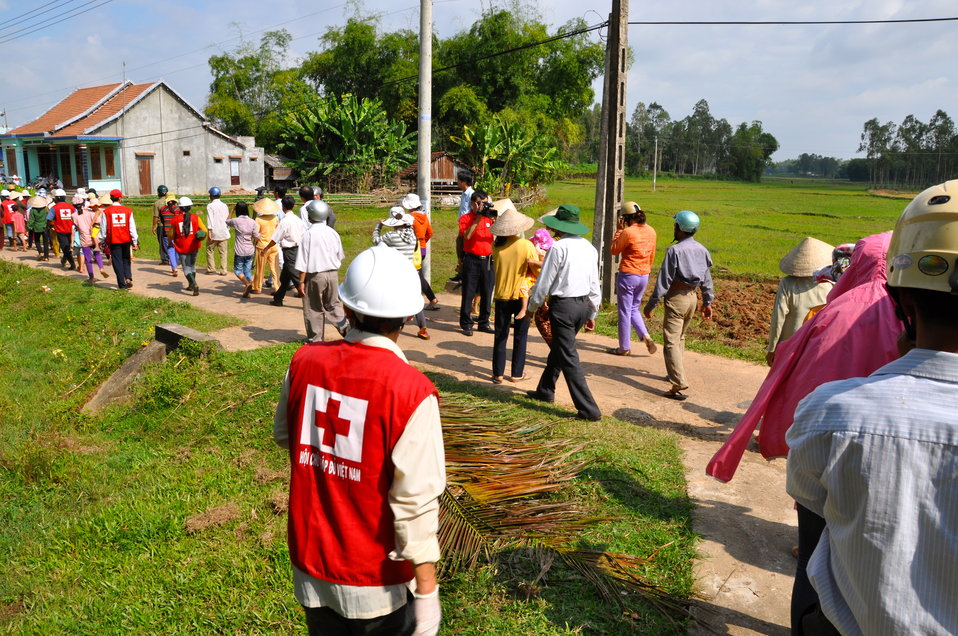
USAID, Red Cross Support Disaster Response Drill in Duy Hoa Commune, Quang Nam Province

Duy Hoa Commune, Quang Nam Province
December 5, 2012